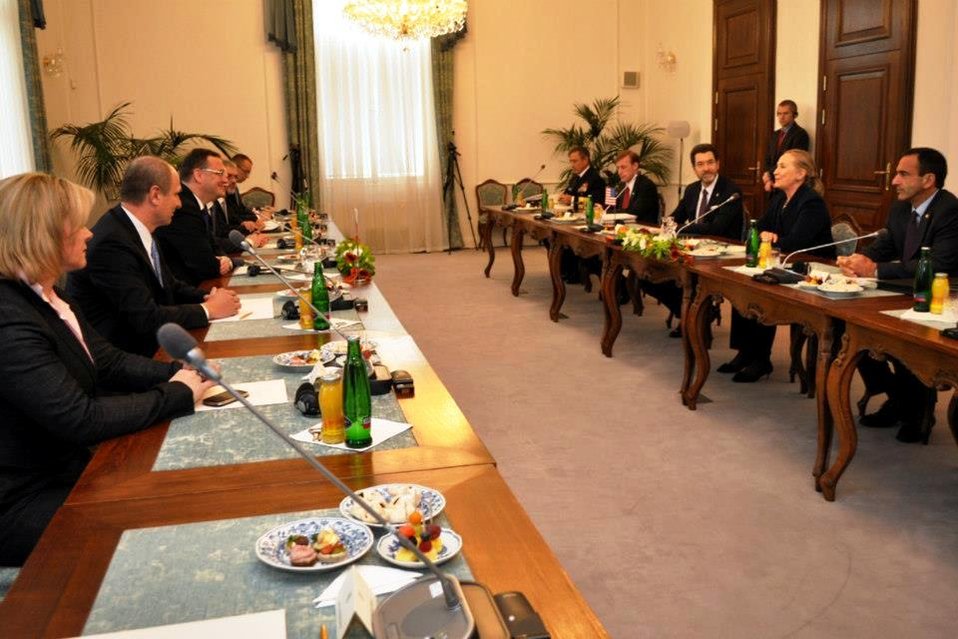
Secretary Clinton Meets With With Czech Prime Minister Necas

U.S. Secretary of State Hillary Rodham Clinton meets with Czech Prime Minister Petr Necas in Prague, Czech Republic, December 3, 2012.